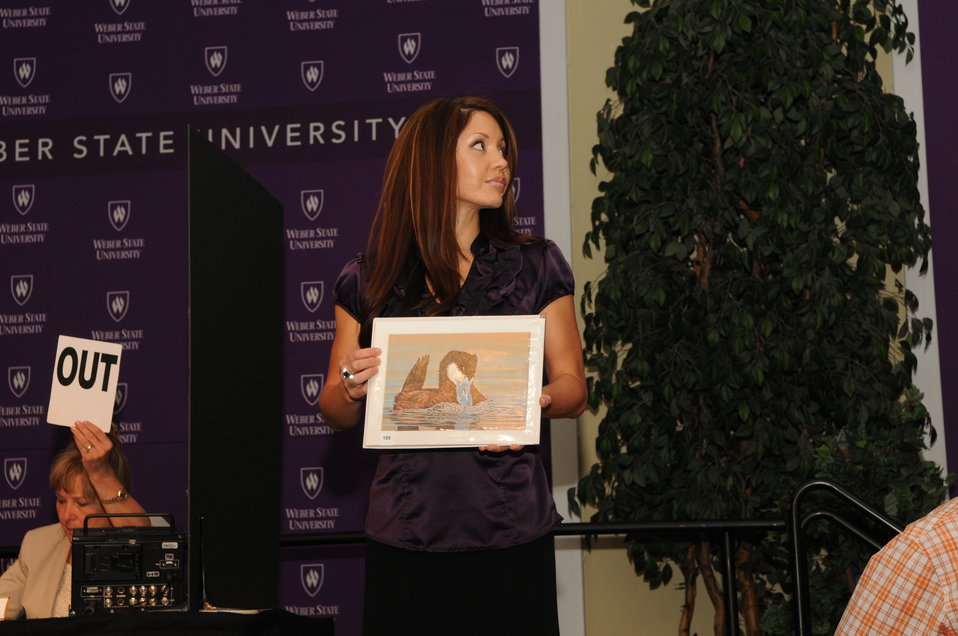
Artwork Presenter

The U.S. Fish & Wildlife Service sponsored the 2012 Federal Duck Stamp Art Contest September 28 and 29 in Ogden, Utah, at Weber State University. A panel of five judges was responsible for choosing the art work used to design the 2013-2014 Migratory Bird Hunting and Conservation Stamp.